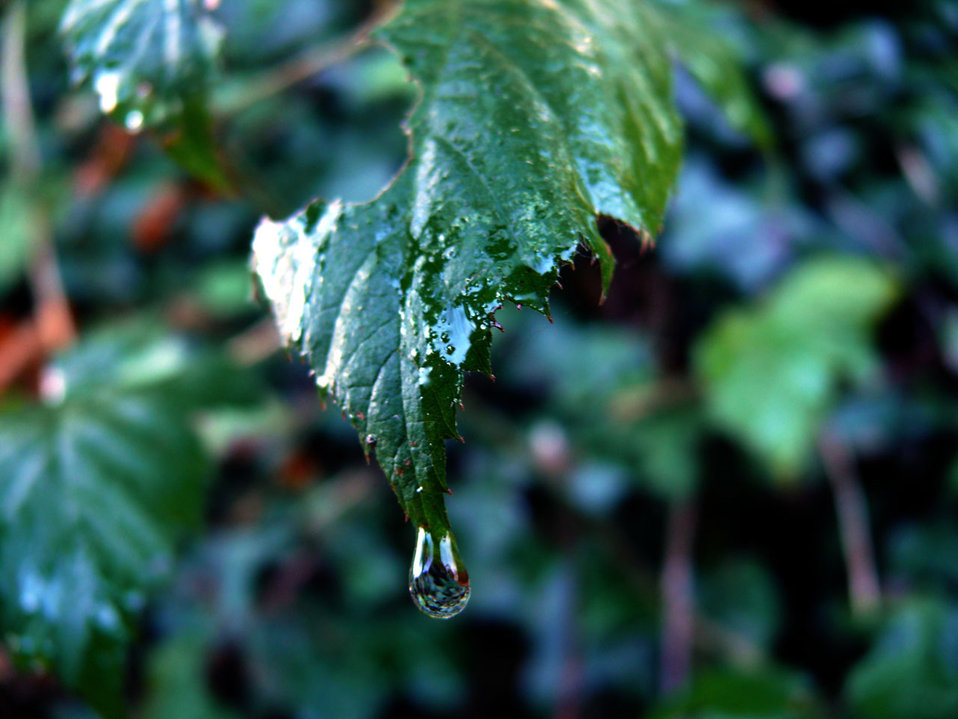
Drop of rain.